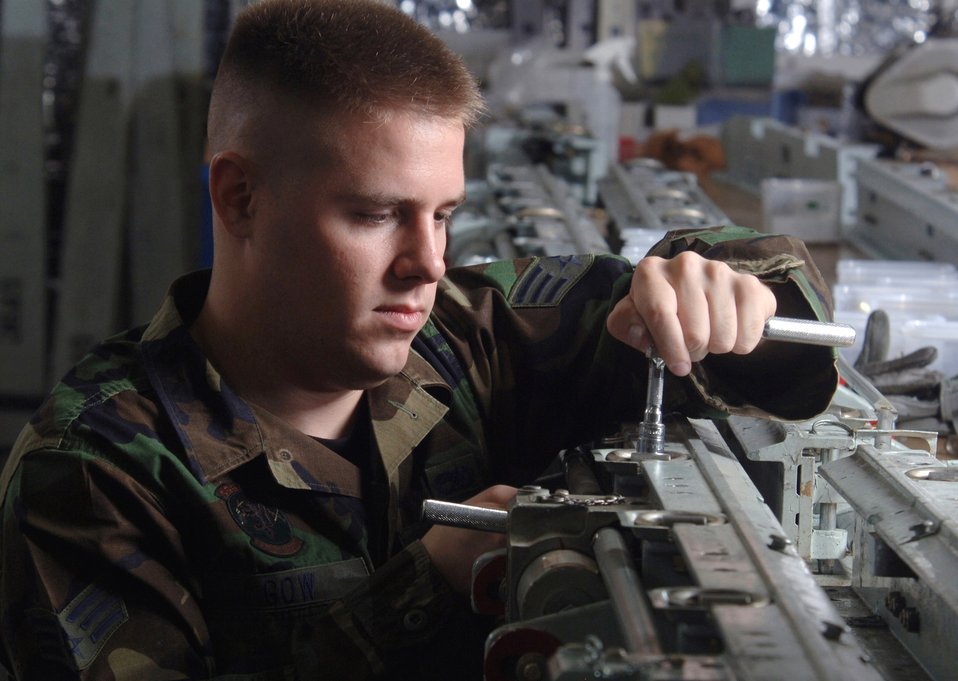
Rail system check-up

Senior Airman Christopher Gow checks a bolt on a D-ring of a C-130 Hercules cargo rail system during an inspection at Yokota Air Base, Japan, on Wednesday, May 3, 2006. The cargo handling system is inspected at least twice a year. Airman Gow is a C-130 crew chief with the 374th Aircraft Maintenance Squadron.